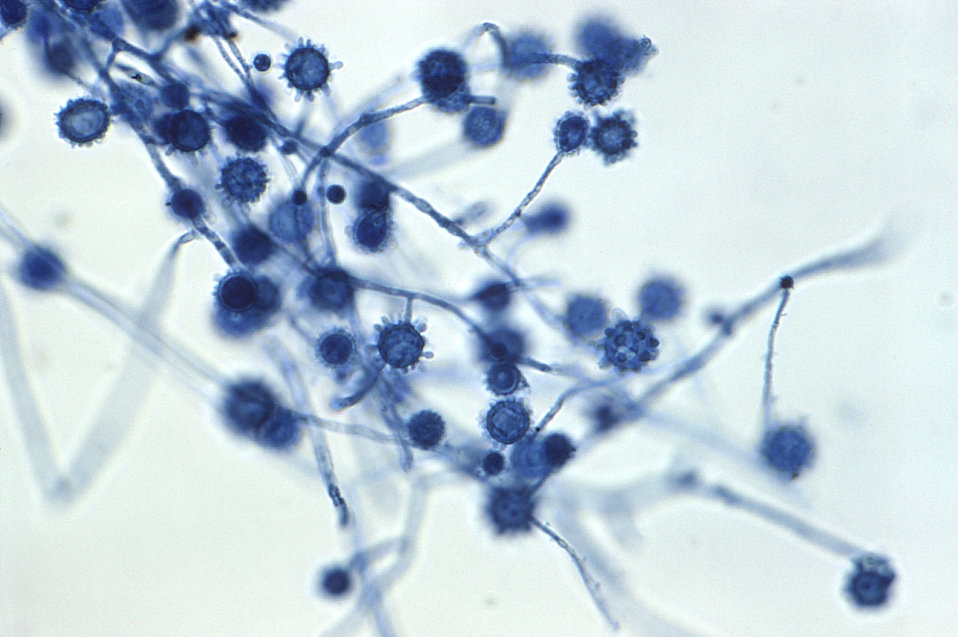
At a magnification of 400X, this photomicrograph revealed some of the ultrastructural morphology exhibited by Histoplasma capsulatum fungal macroconidia and macroconidia, which were isolated from Israeli soil samples.